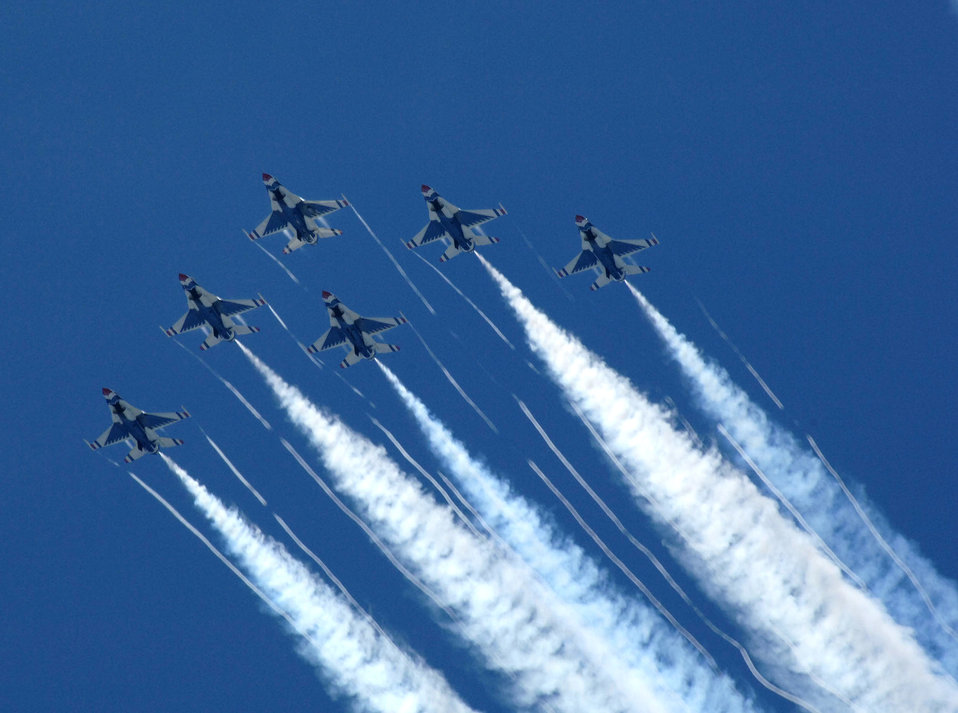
Guatemalan International Air Show 2005

GUATEMALA CITY, GUATEMALA (AFPN) -- The Thunderbirds fly over the skies of Guatemala during the Guatemalan International Air Show 2005 above an estimated 20,000 Guatemalans. They performed there Oct. 26. The last time the Thunderbirds were in Guatemala was in 1974. Other U.S Air Force participants included the F-15 demonstration team from Eglin AFB, Fla.; a KC-135 from the New Hamshire Air ational Guard; two C-17s from McChord AFB, Wash., and McGuire AFB, N.J.; and a C-130 from the Puerto Rico ANG.